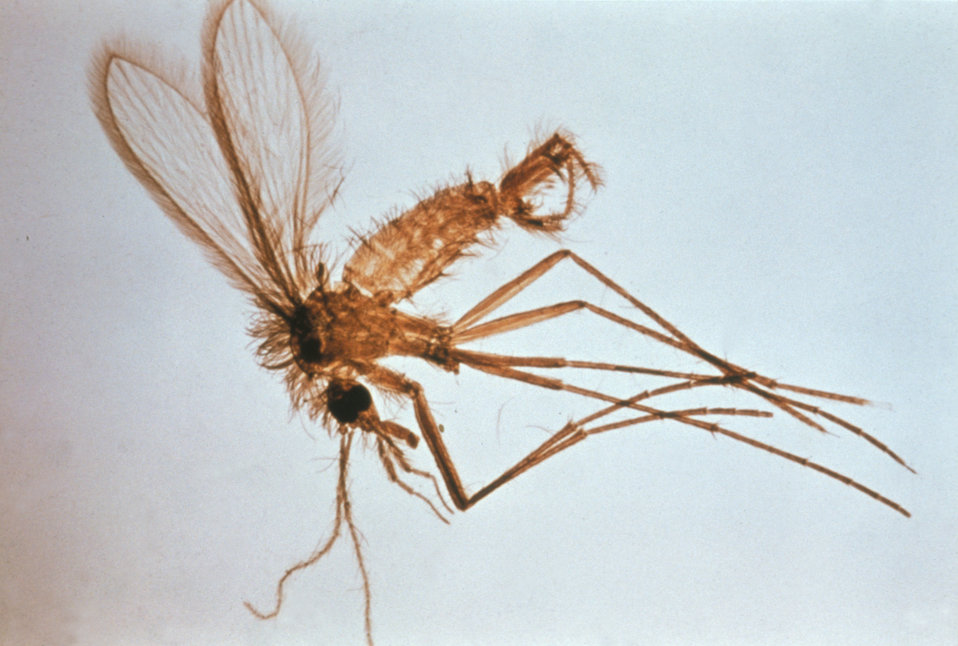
This is a male Phlebotomus sp. sand fly, which feeds on plant nectar.